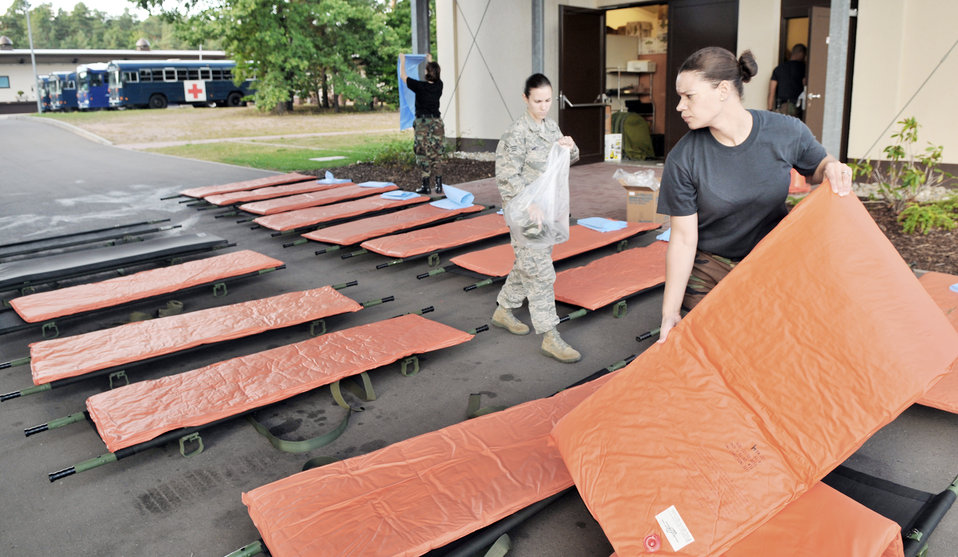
Aeromedical staging facility staff to reach major milestone in warrior care

Tech. Sgt. Laura Small places mats on gurneys Aug. 27, 2009, Ramstein Air Base, Germany. The gurneys will be used to transport wounded warriors to an aircraft taking them to Walter Reid Medical Center in Washington, D.C., for further medical treatment. Sergeant Small is a 86th Contingency Aeromedical Staging Facility medical technician.